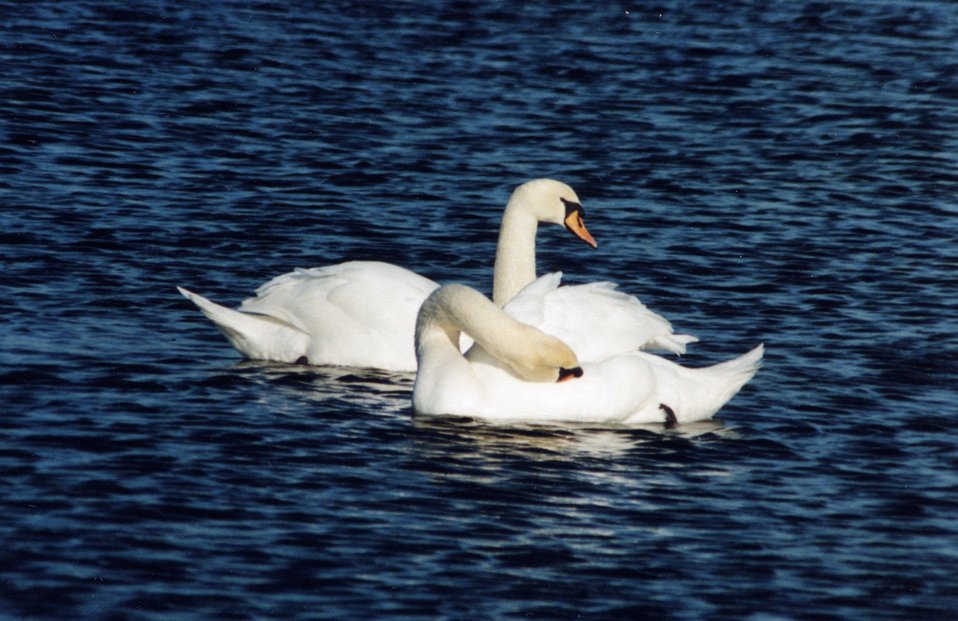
Mute swan pair